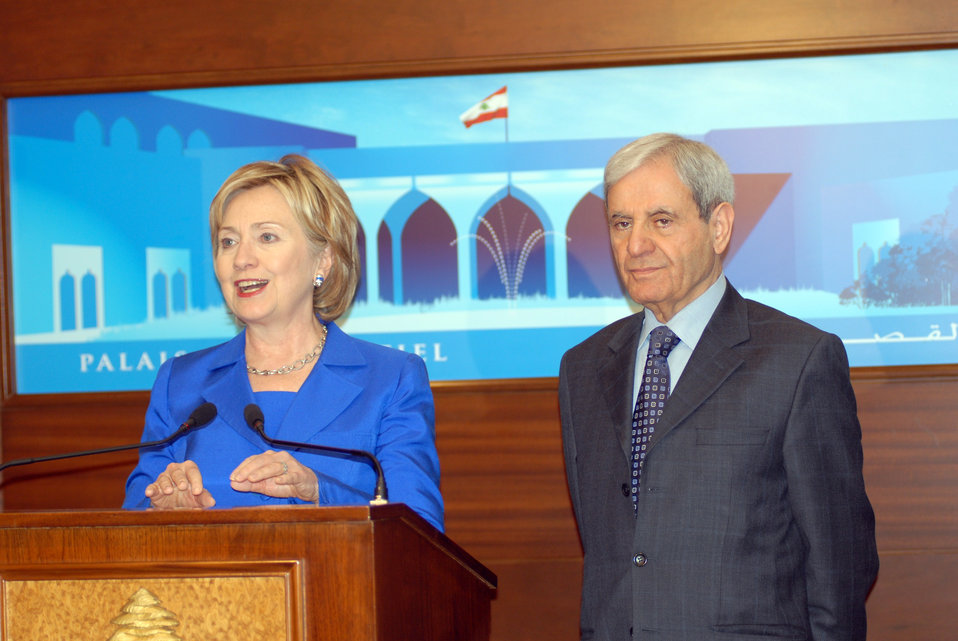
Secretary Clinton Meets With Lebanese Foreign Minister

U.S. Secretary of State Hillary Rodham Clinton with Lebanese Foreign Minister Fawzi Salloukh at press availability in Beirut, Lebanon April 26, 2009.